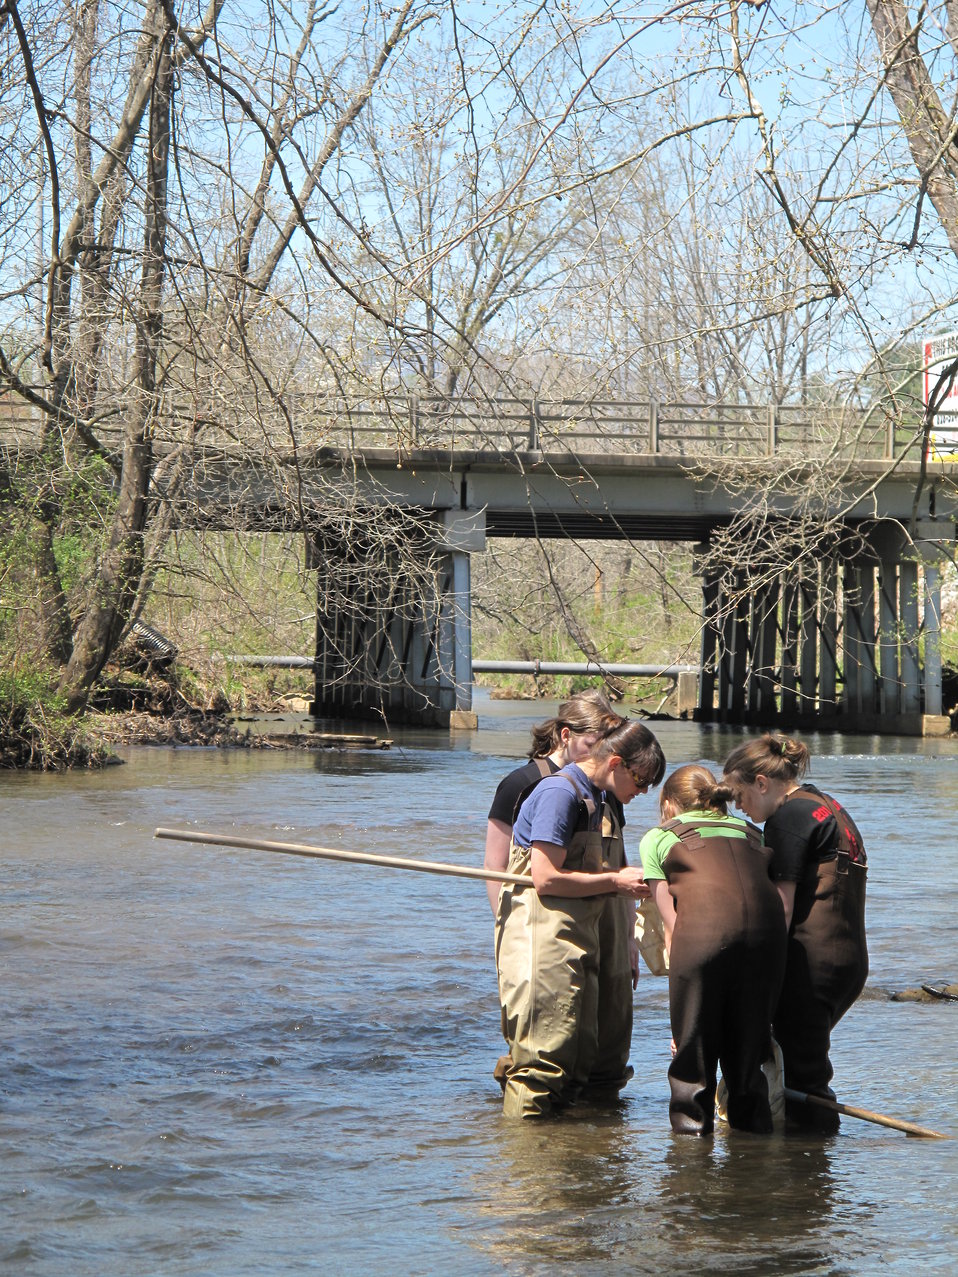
Jenny Sanders helping students with net

Over the course of four days in late April 2014, every eighth grade student at North Carolina’s Macon Middle School, Highlands School, Nantahala School, and Trimont Christian Academy visited Cartoogechaye Park, in Macon County, to learn about rivers.

The students rotated through four stations:
1) water chemistry where they had the opportunity to help test water from Cartoogechaye Creek to gain an idea of the stream’s water quality;
2) aquatic insects, where students collected and identified animals like mayflies and caddisflies, learning how life in the river reflects the health of the river
3) fish, where they were able to collect and identify fish in the stream, and then
4) stream flow, where they measured and calculated the downstream movement of water, including the velocity of the water and the total volume of water being moved per second.

The event was organized by the University of Georgia's Coweeta Long-Term Ecological Research (LTER) Program, which is based at the USFS Coweeta Hydrologic Laboratory. (coweeta.uga.edu/), with sizable support from the Land Trust for the Little Tennessee. Other supporters include the U.S. Fish and Wildlife Service, N.C. Natural Heritage Program, and N.C. Division of Water Resources.